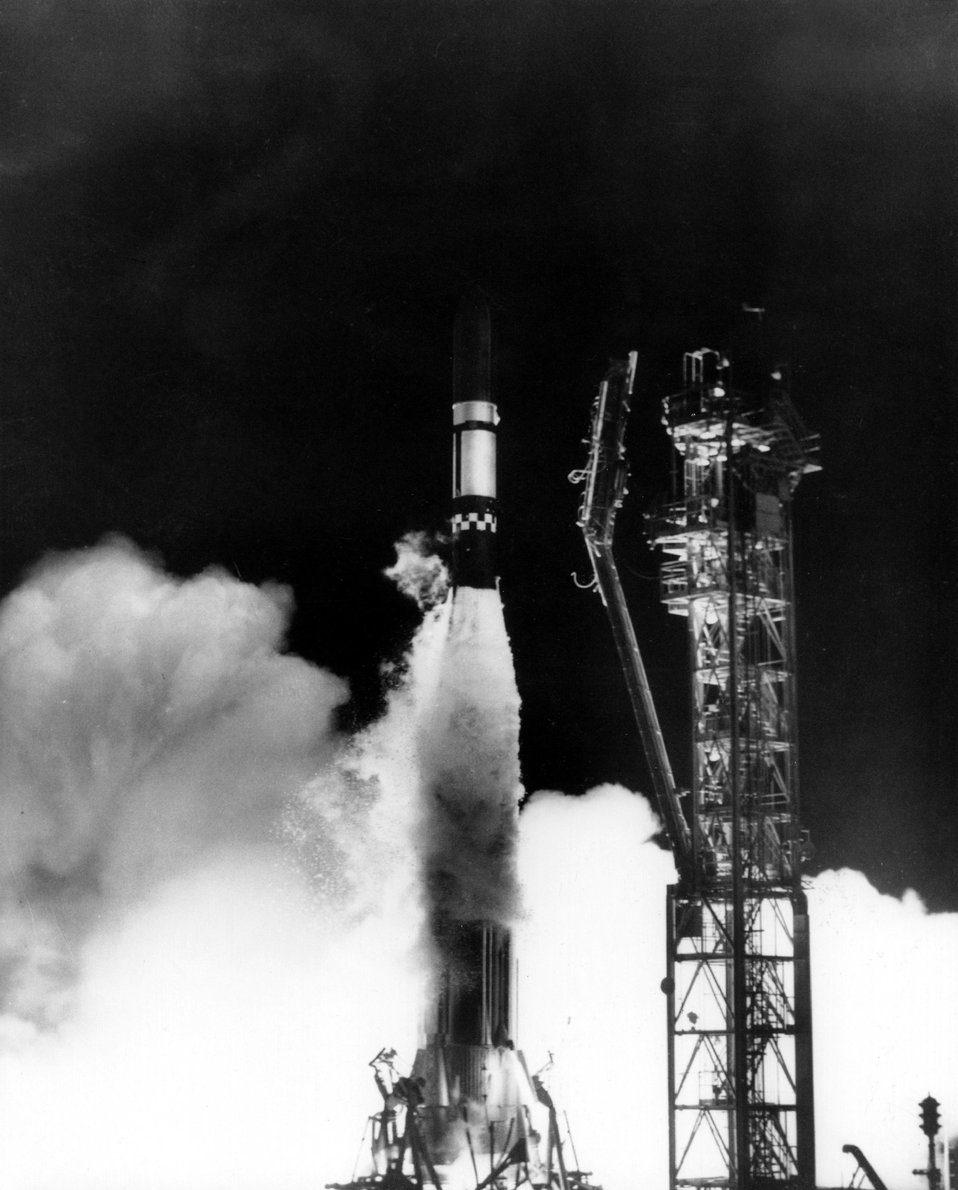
Twin research spacecraft designed to detect nuclear test detonations in space were successfully launched tonight by the Air Force, for the Advanced Research Projects Agency of the Department of Defense. c. 1964